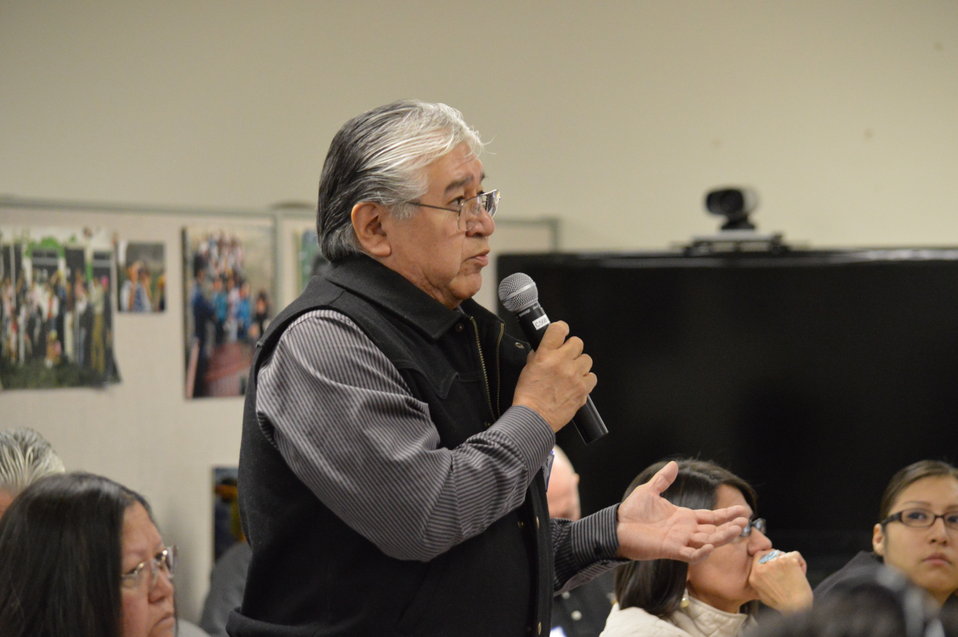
Discussion

Questions and comments are raised at the Eagle Summit III in Denver, Colorado on March 20, 2014 at the Rocky Mountain Arsenal National Wildlife Refuge.